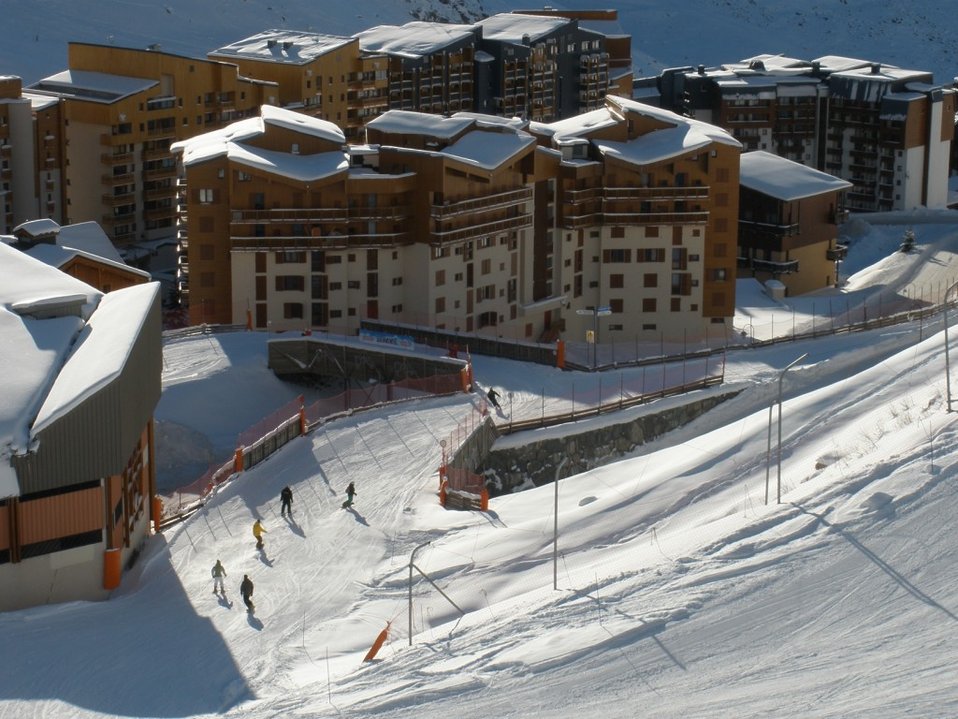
עברית: עיירת הסקי ואל טורנס Deutsch: Piste durch das Dorf von Val Thorens.